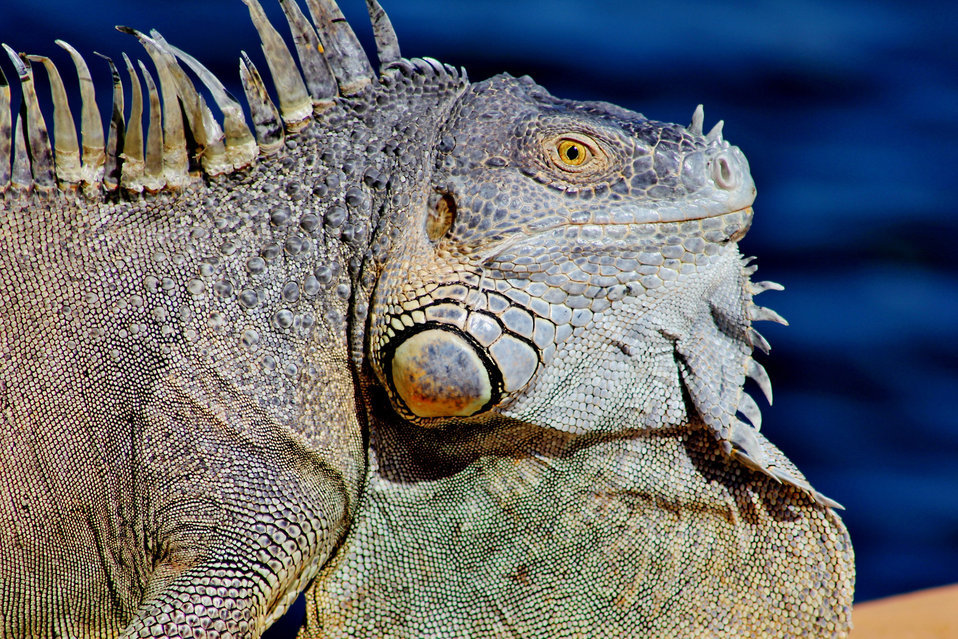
Iguana

Curious iguana.